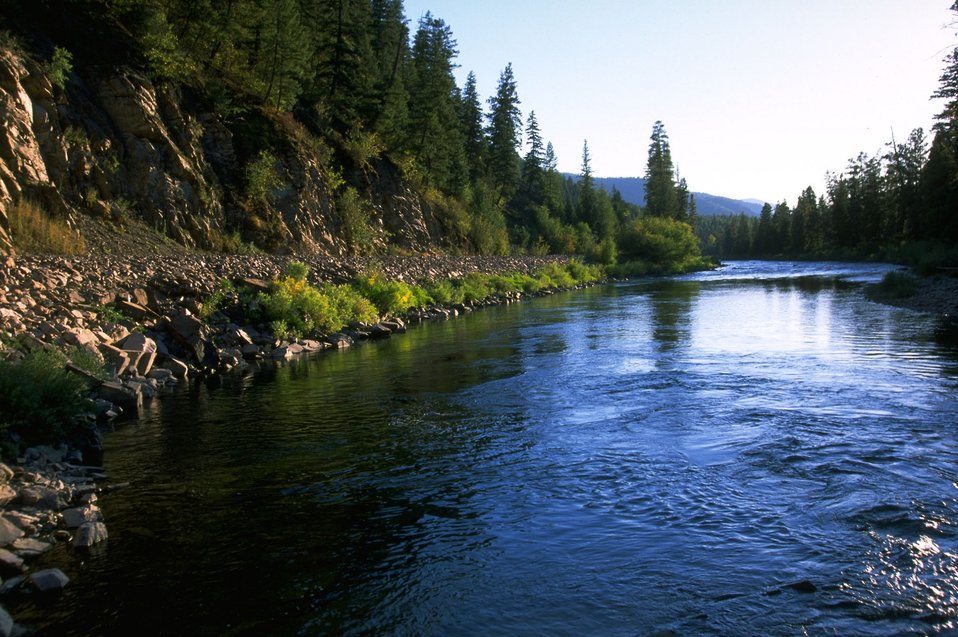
McNamara Road along the Blackfoot River